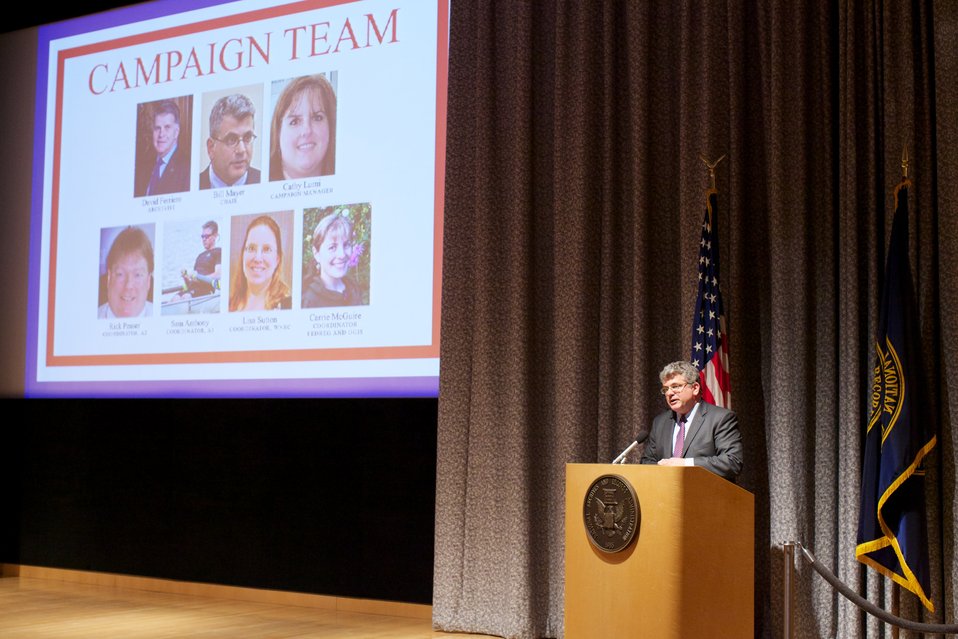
CFC Recognition Event